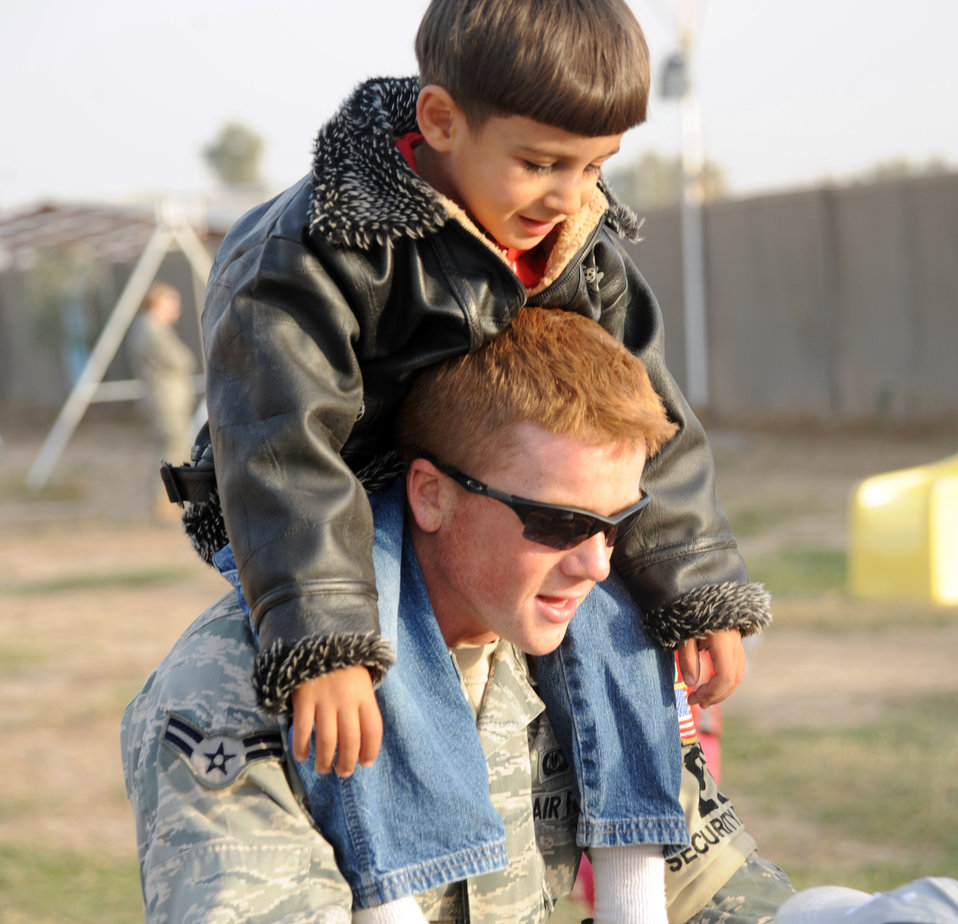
Servicemembers donate items to Iraqi neighbors

Airman 1st Class Shane Appleton gives a piggy-back ride to an Iraqi boy Jan. 29, 2010, near Sather Air Base, Iraq, while volunteering with the Sather AB Rising Six good neighbor program. Airman Appleton is assigned to the 447th Expeditionary Civil Engineer Squadron.